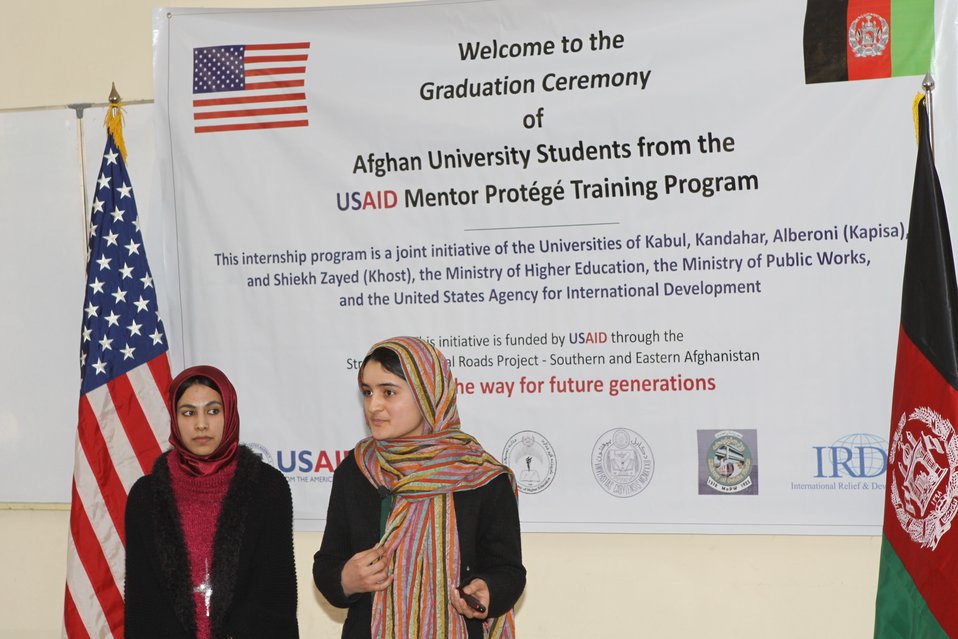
Female University Students Complete Internship

Kabul, Afghanistan | March 16, 2011 – In response to a demand for qualified Afghan engineers, Kabul University celebrated completion of an intensive five-month Mentor Protégé Training Program today by 10 female fourth year university students. The Training Program is a joint effort between the Government of the Islamic Republic of Afghanistan, the U.S. Agency for International Development (USAID), and the Universities of Kabul, Kandahar, Alberoony in Kapisa, Shiekh Zayed in Khost. The graduation ceremony highlighted collaboration with these national institutions in building the technical skills of young Afghans, made possible by USAID.

Four of the interns are engineers, while the remaining six are from the faculties of computer science, economics, and psychology.

Speaking about the event, H.E. Minister of Public Works Abdul Qudus Hamidi said, “The future of Afghanistan lies in developing the skills of our youth, and the engineering skills of these graduates today represent a small but important step forward for the country.”

Keynote speakers at the ceremony included H.E. Deputy Minister of Higher Education Abdul Rahim; USAID Senior Deputy Mission Director Robert Hellyer; and Chancellor of Kabul University Professor Hamidullah Amin. Approximately 150 people, including current and former students attended the graduation.

Launched last year, the Mentor Protégé Training Program has provided qualifying students the opportunity to intern with USAID’s Strategic Provincial Roads-South and East Afghanistan project and gain practical experience in a real work environment. The goal of the program was to offer interns the opportunity to gain hands-on experience to reinforce their formal studies. A total of 30 students from four national universities have benefitted from this program.

“The promotion of women’s rights is integrated into the overall U.S. Government development strategy and can be found in key programs, including education, healthcare, security, rule of law, political participation, agriculture, and economic development,” said Robert Hellyer. “The U.S. Government is committed to the Afghan leadership of programs that directly enhance development, particularly as it relates to women’s issues.”

This event also highlighted the learning achievements of students and emphasized the importance of hands-on internship programs. The curriculum is designed to instill students with the knowledge and confidence to qualify for engineering positions upon completion of their fourth year at their respective universities.